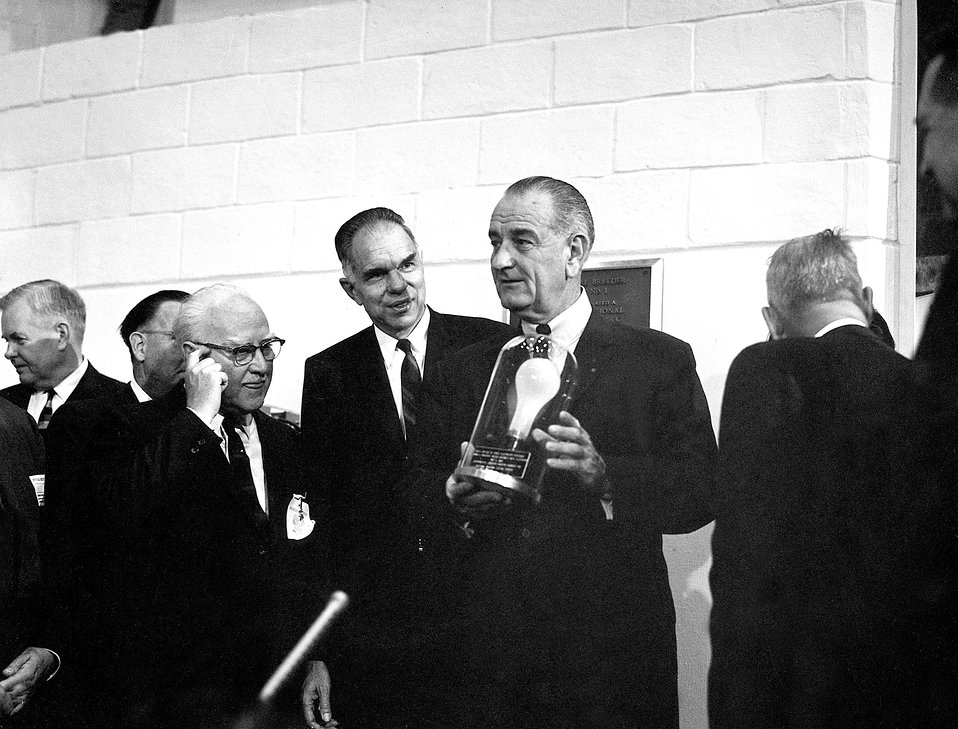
President Lyndon B. Johnson and the first Lightbulb.